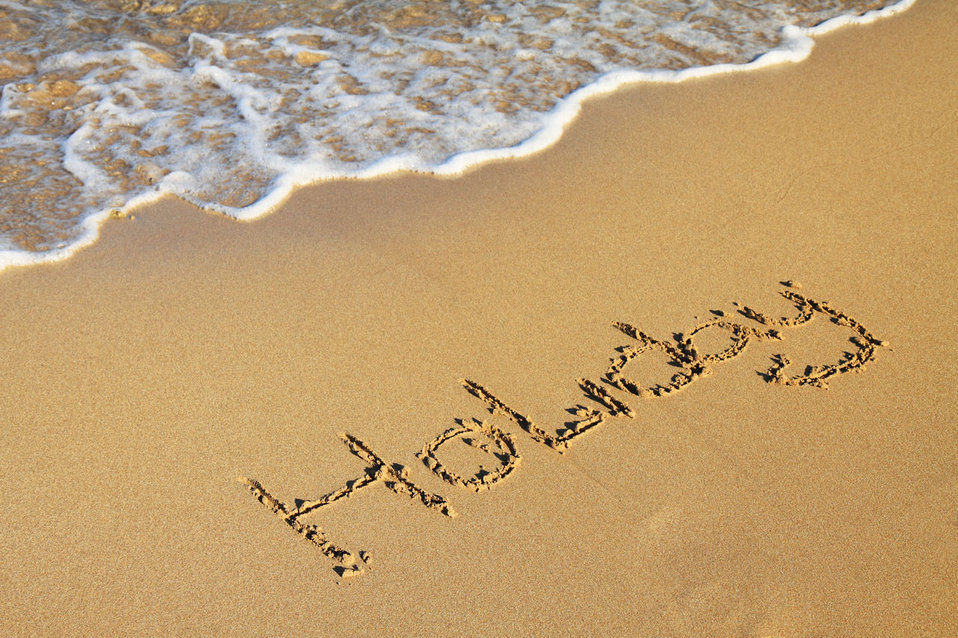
Word holiday in sand

Holiday word written on beach.